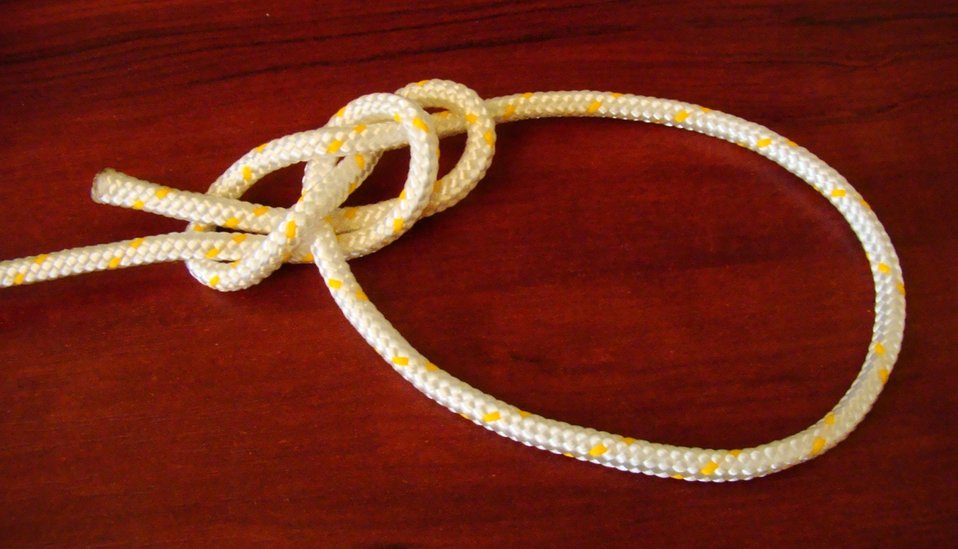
A Yosemite bowline